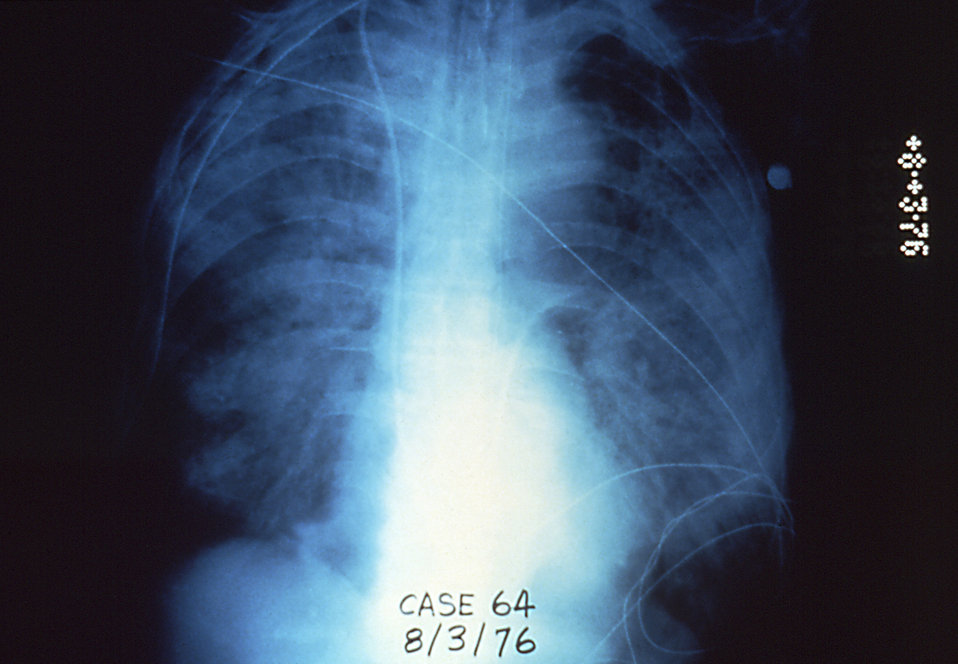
This anteroposterior x-ray revealed bilateral pulmonary infiltrates in a patient with Legionnaires' disease (LD).